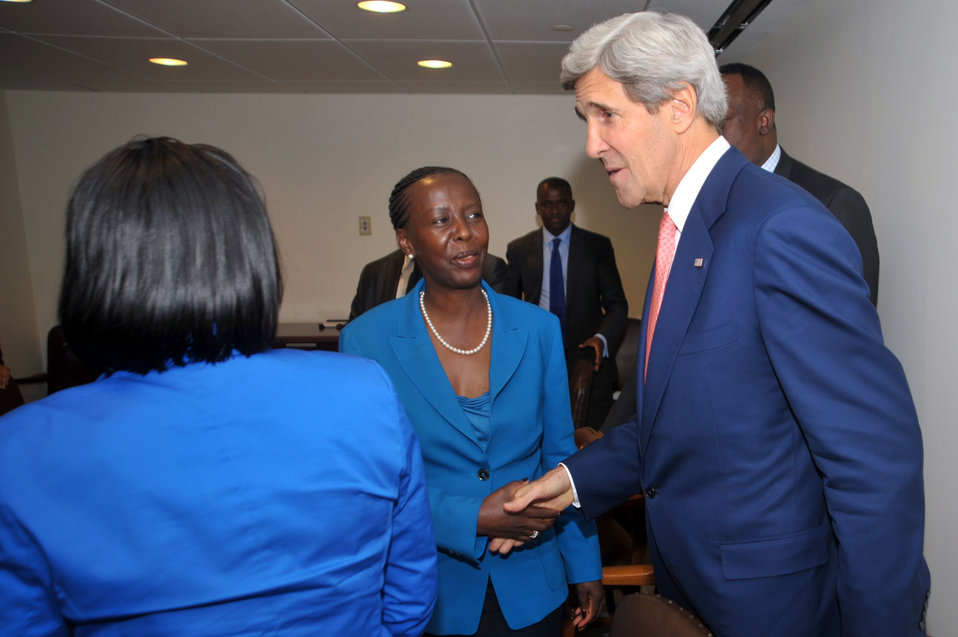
Secretary Kerry Meets With Rwandan Foreign Minister Mushikiwabo

U.S. Secretary of State John Kerry meets with Rwandan Foreign Minister Louise Mushikiwabo at the United Nations in New York on July 25, 2013.